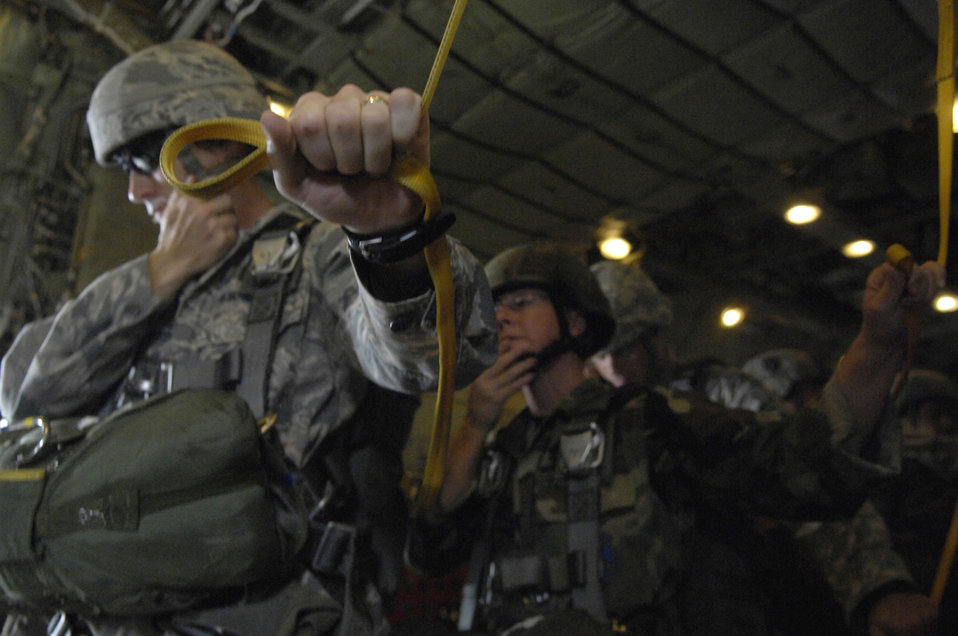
Jump training at Lackland

Master Sgt. Jamie Newman adjusts his helmet as he waits to jump out of a Marine C-130 Hercules over Lackland Air Force Base, Texas, July 23. Sergeant Newman is a safety instructor at Army Ranger School in Fort Benning, Ga. Airmen from the 342nd Training Squadron at Lackland AFB along with SERE specialists, Marines, Soldiers and a Royal Air Force exchange officer conducted competency airborne training.